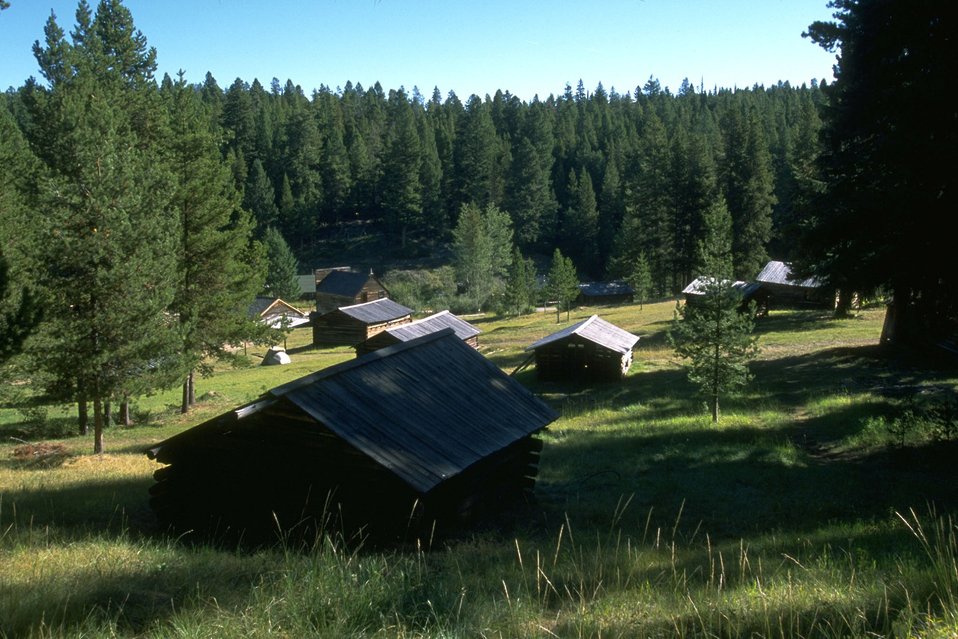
Garnet Ghost Town residential cabins